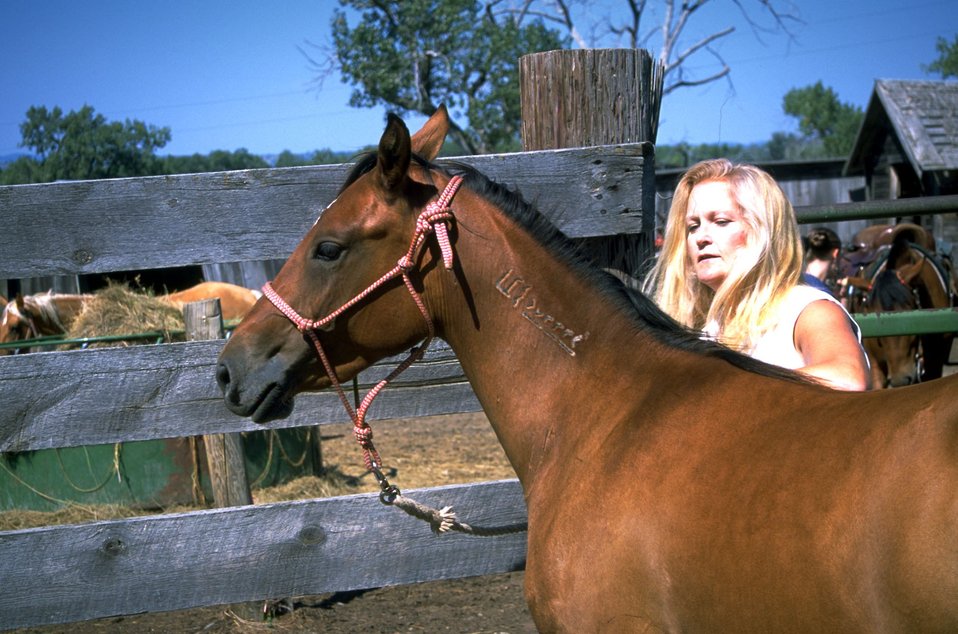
Beautiful adopted Horse